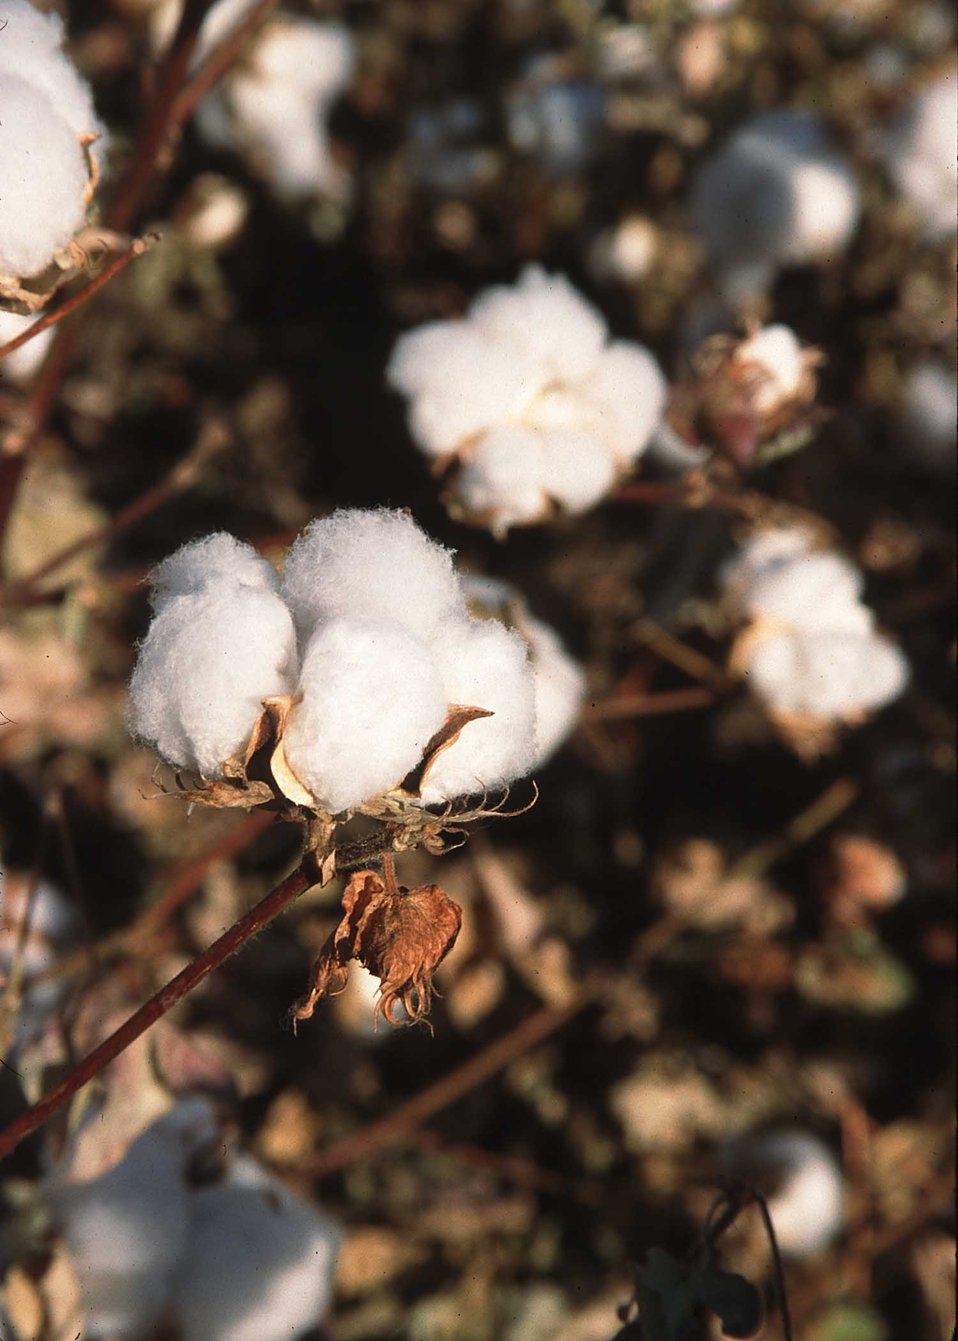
Cotton grown in Northern California.